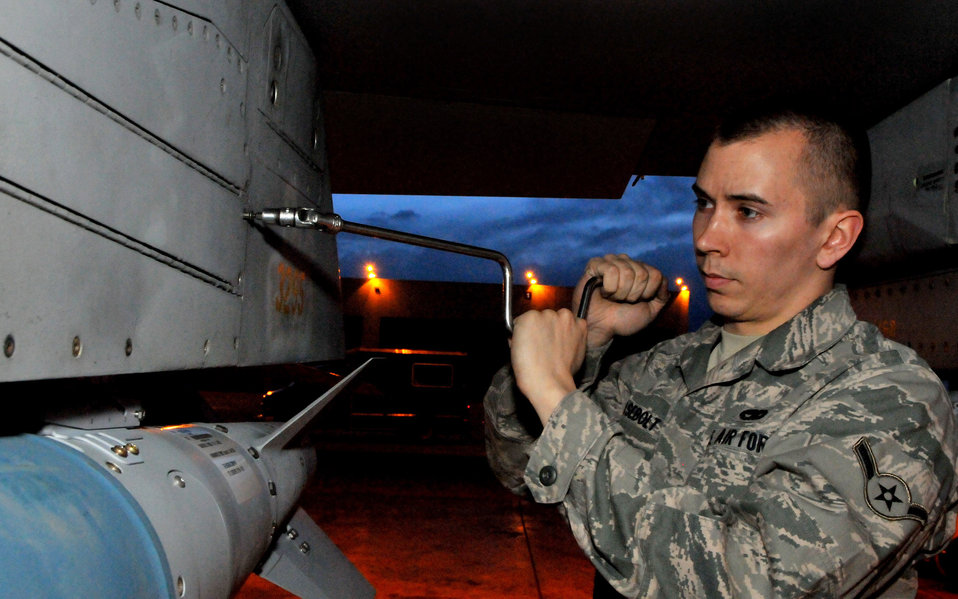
Kunsan Airmen arm F-16s at Red Flag-Alaska

Airman Jon Casebolt tightens a panel after installing an inert Joint Direct Attack Munition GBU-38 to an F-16 Fighting Falcon during Red Flag-Alaska April 19, 2010, at Eielson Air Force Base, Alaska. Airman Casebolt is a weapons load crewmember with the 8th Aircraft Maintenance Squadron deployed from Kunsan Air Base, South Korea.